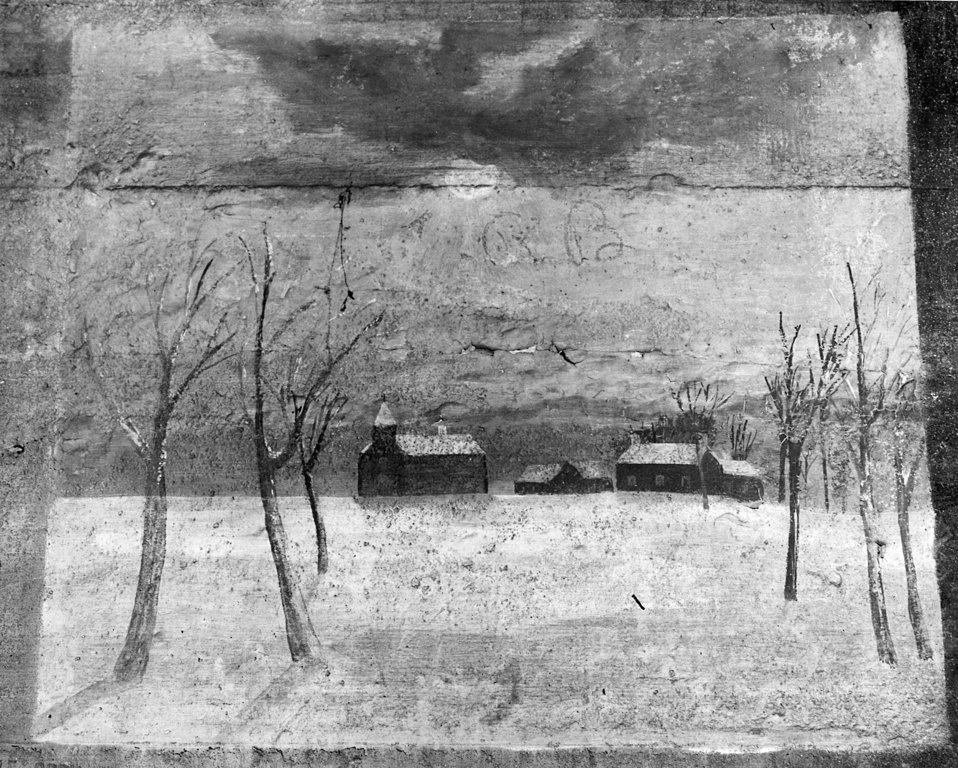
Painting of Wheat School by Edgar Ward 1940 Oak Ridge

MED-290 DOE photo Ed Westcott 1940 Oak Ridge Tennessee